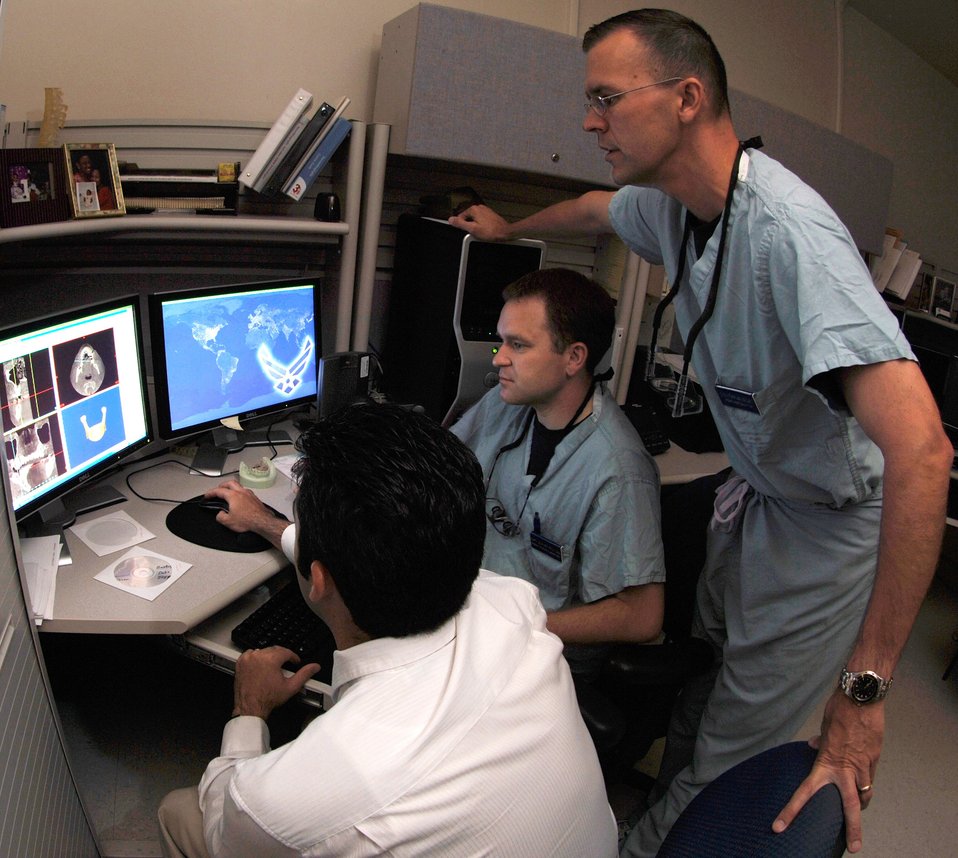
Stereolithography

Alain Carballeyra (left), director of the 59th Medical Wing stereolithography lab at Wilford Hall Medical Center, Lackland Air Force Base, Texas, uses state-of-the-art graphic programs to make changes on a computer model to help Lt. Col. (Dr.) Steve Maller (center), director of resident education and training, and periodontic resident Capt. (Dr.) Josh Hethcox plan precise placement of implants for a patient. Dental and oral surgeons from Wilford Hall and nearby Brooke Army Medical Center frequently enlist the aid of the stereolithography lab to develop treatment plans to minimize surgery and patient recovery time. Colonel Maller and Captain Hethcox are with the 59th Dental Training Squadron.